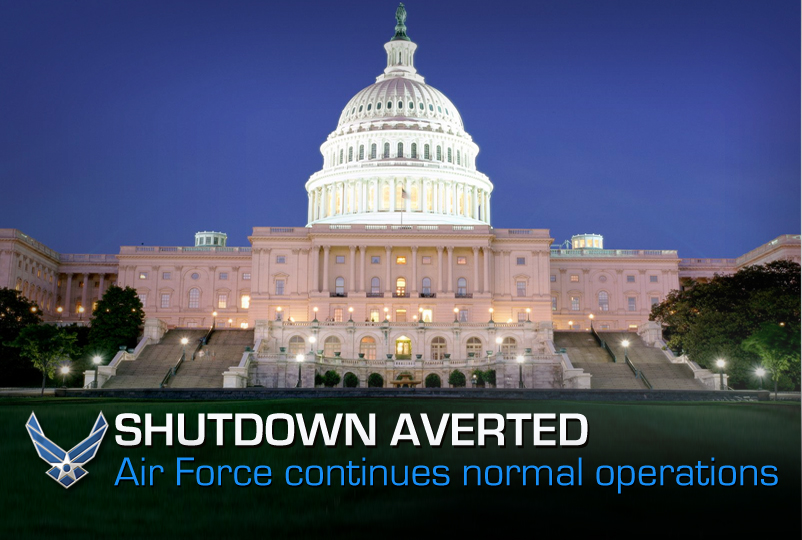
Shutdown Averted